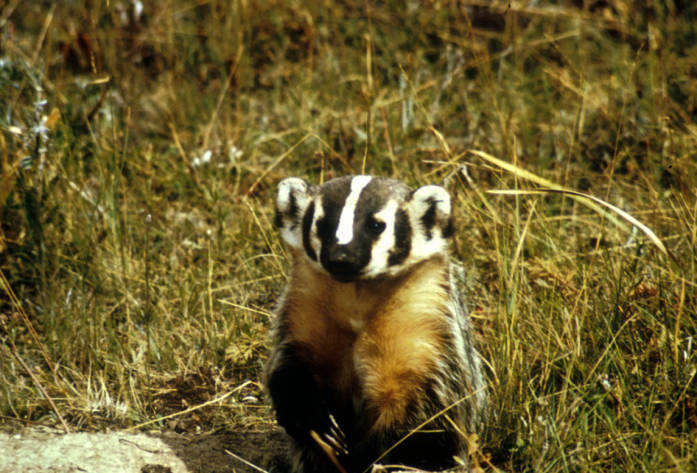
badger